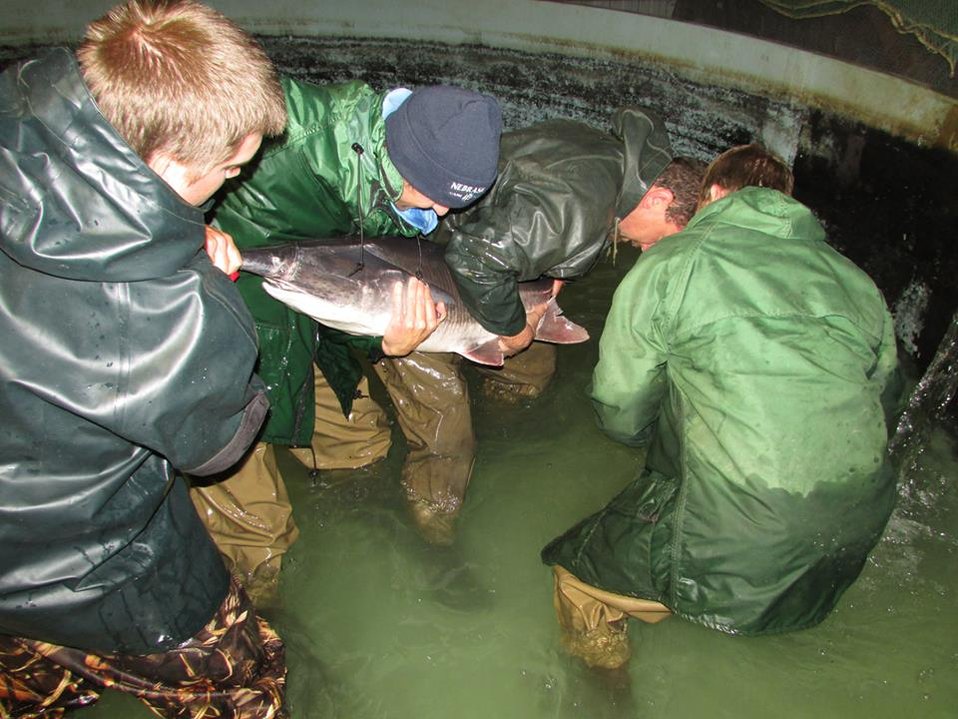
'Hold On!'

Yes, it does take 800 lbs of human to handle 100 lbs of paddlefish.